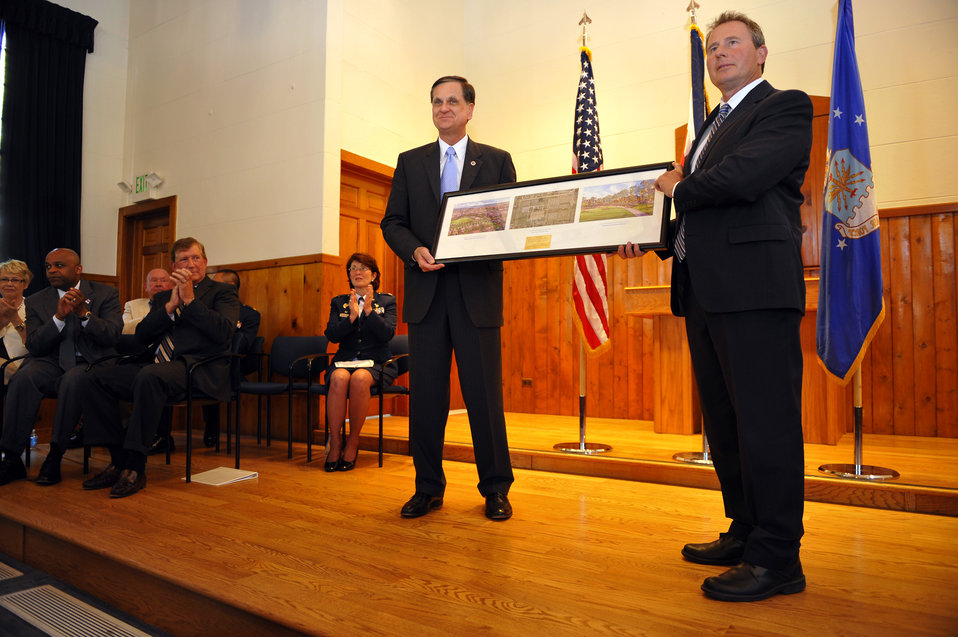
AF transfers last piece of former Lowery AFB back to community

Denver and Air Force Personnel Center leaders watch as a lithograph is presented to Montgomery Force, right, by Stephen TerMaath in Denver on May 31, 2012. The presentation marked the turn-over of the Buckley Annex, the last 70 acres of the former Lowry Air Force Base, to the city of Denver. Force is the Lowry Redevelopment Authority executive director and TerMaath is the Base Realignment and Closure Program Management division chief.